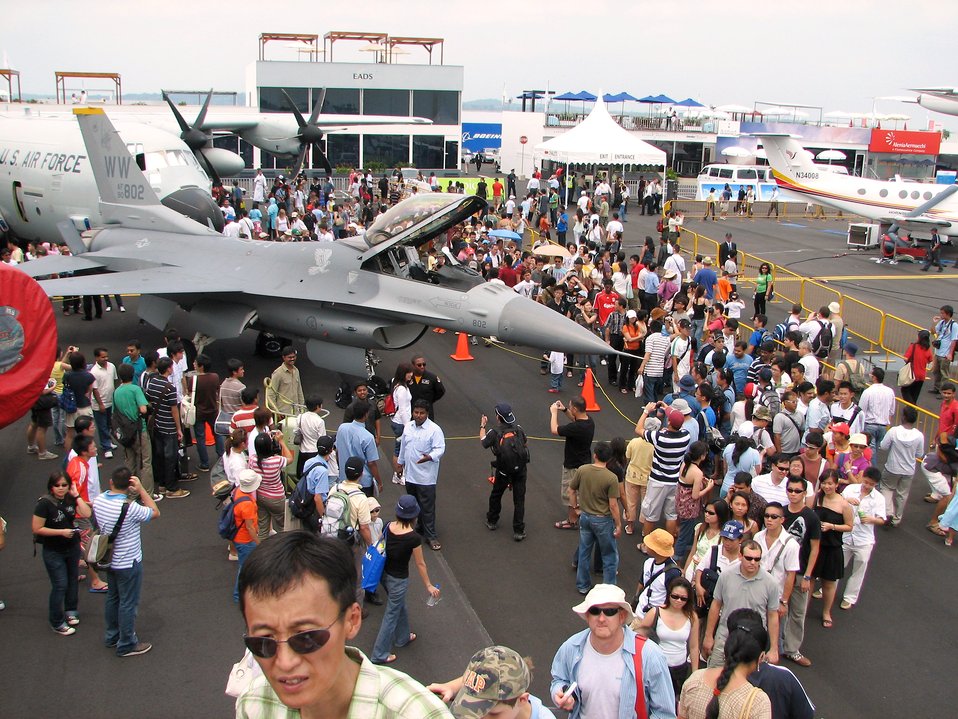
American airpower on display

Crowds gather around an F-16 Fighting Falcon static display during a public day at the 2008 Singapore Air Show Feb. 23. The F-16 is assigned to the 35th Fighter Wing, Misawa Air Base Japan. In addition to the static display, the Pacific Air Forces F-16 Demonstration Team and Pacific Fleet's F/A-18 Super Hornet Demonstation Team performed at the air show. A total of seven aircraft were on static display.